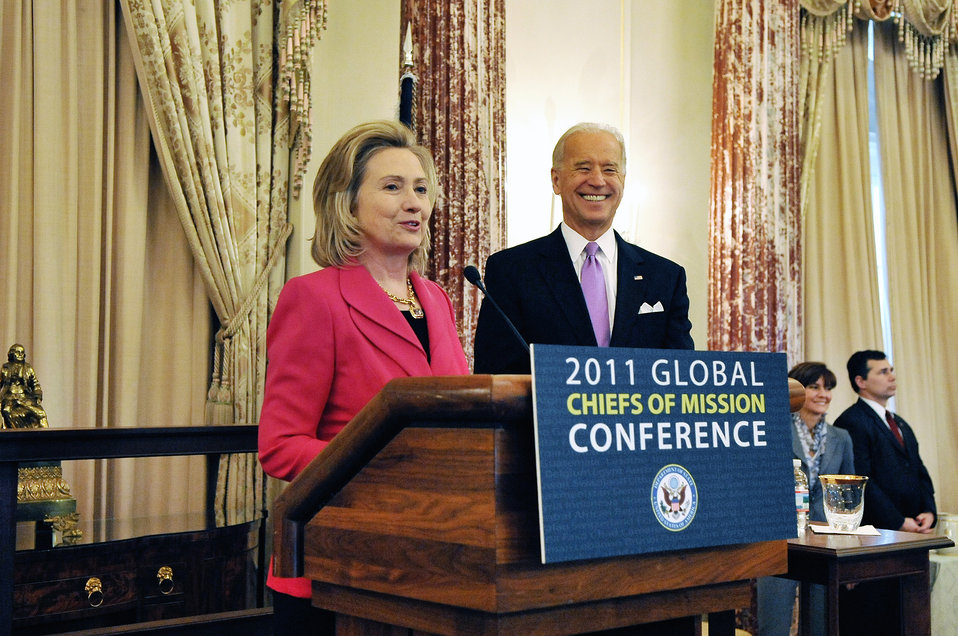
Secretary Clinton Introduces Vice President Biden

U.S. Secretary of State Hillary Rodham Clinton introduces U.S. Vice President Joseph Biden to speak at the 2011 Global Chiefs of Mission Conference at the U.S. Department of State in Washington, D.C., on January 3, 2011.